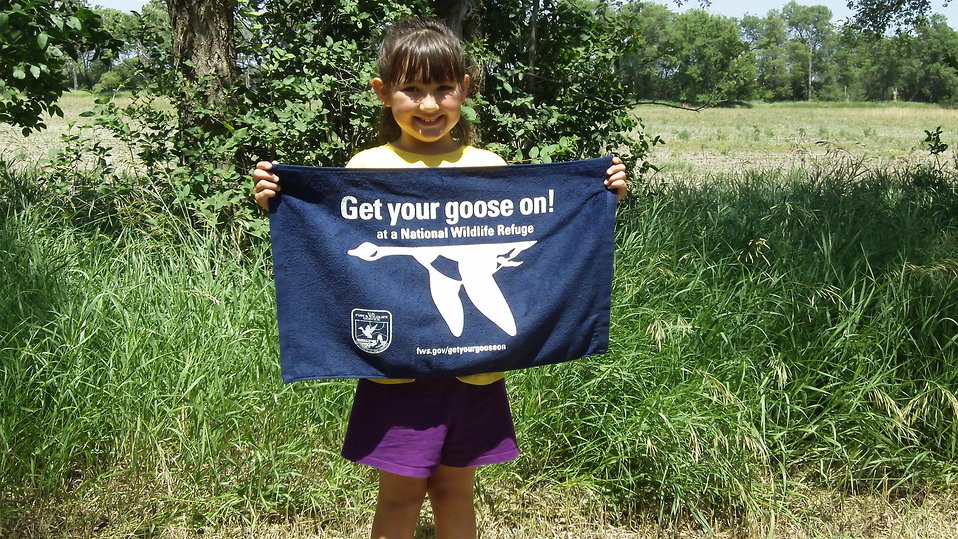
Get Your Goose On!

Photo taken at Huron Wetland Management District in east-central South Dakota.